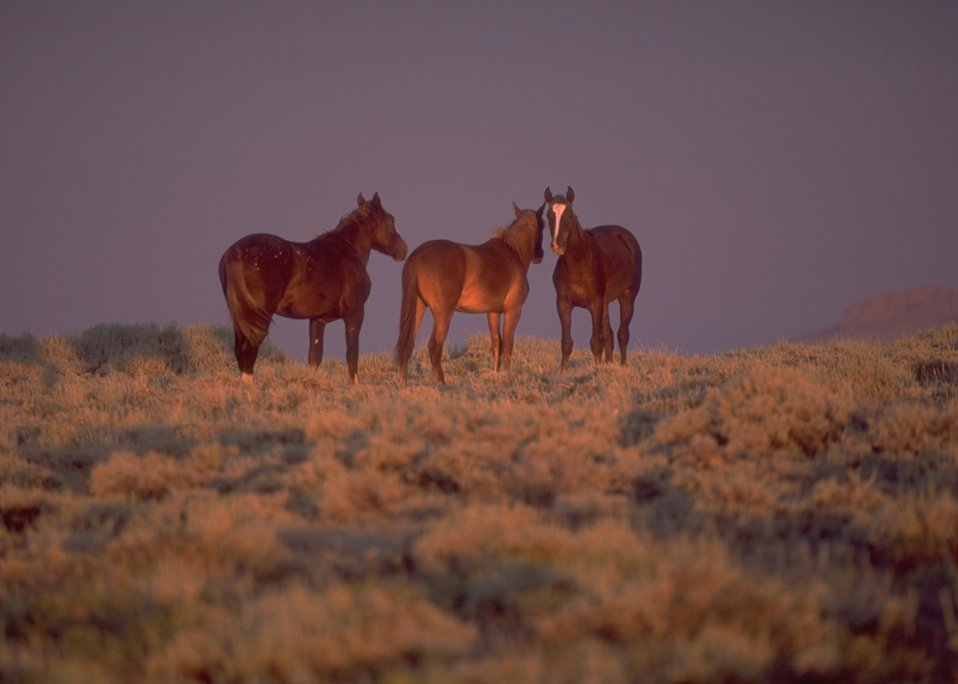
Wild horses, Rock Springs Field Office.